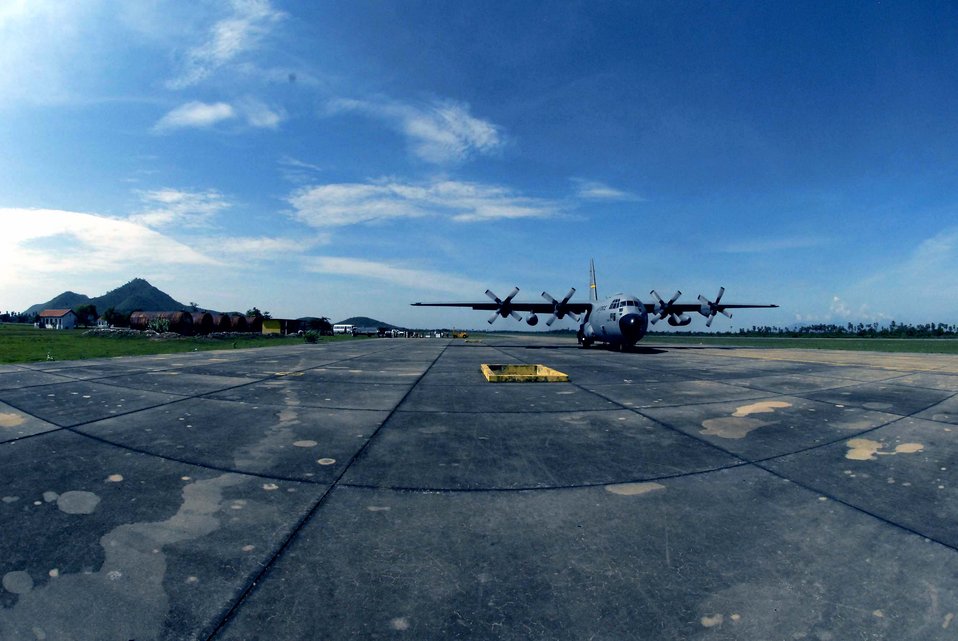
Cambodian relief

A C-130 Hercules taxies down the runway May 24 after landing at Kampong Chhnang Province Airfield, Cambodia. This mission delivered 3,000 pounds of medical supplies for two separate operating locations in Cambodia in support of Operation Pacific Angel, a joint/combined humanitarian assistance operation in support of capacity-building efforts. Participating services include the active duty, Reserve and National Guard components of the Air Force, Army, Royal Thai air force, and Royal Cambodian armed forces. The C-130 is from the 144th Airlift Squadron from Kulis Air National Guard Base, Alaska.